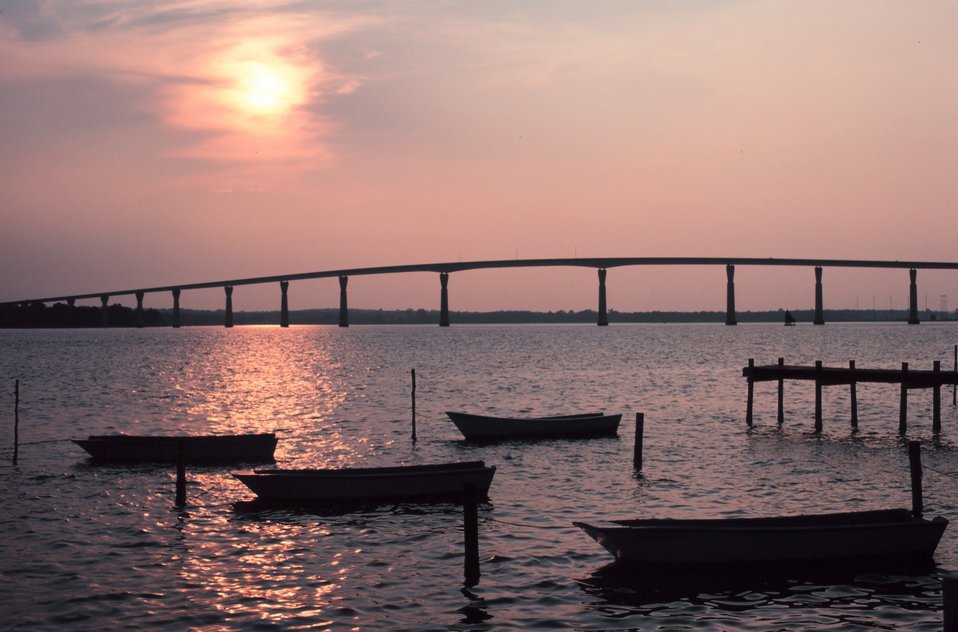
Sunset over the Thomas Johnson Bridge joining Calvert and St. Mary's Counties Maryland.